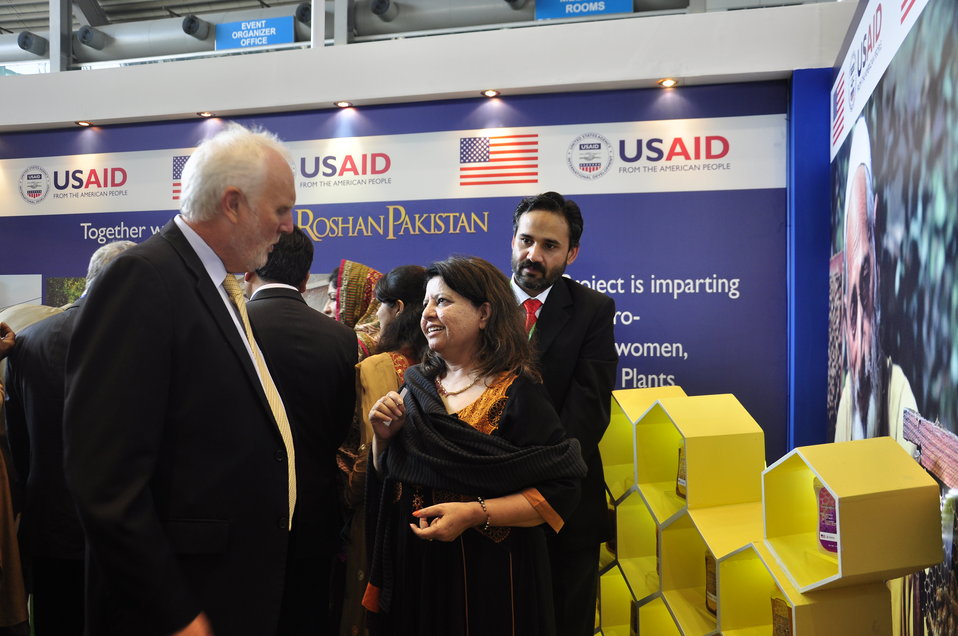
Australian High Commissioner, Mr. Peter Heyward while interacting with the team of USAID's Entrepreneurs Project at Dawn Sarsabz Pakistan Agri Expo.